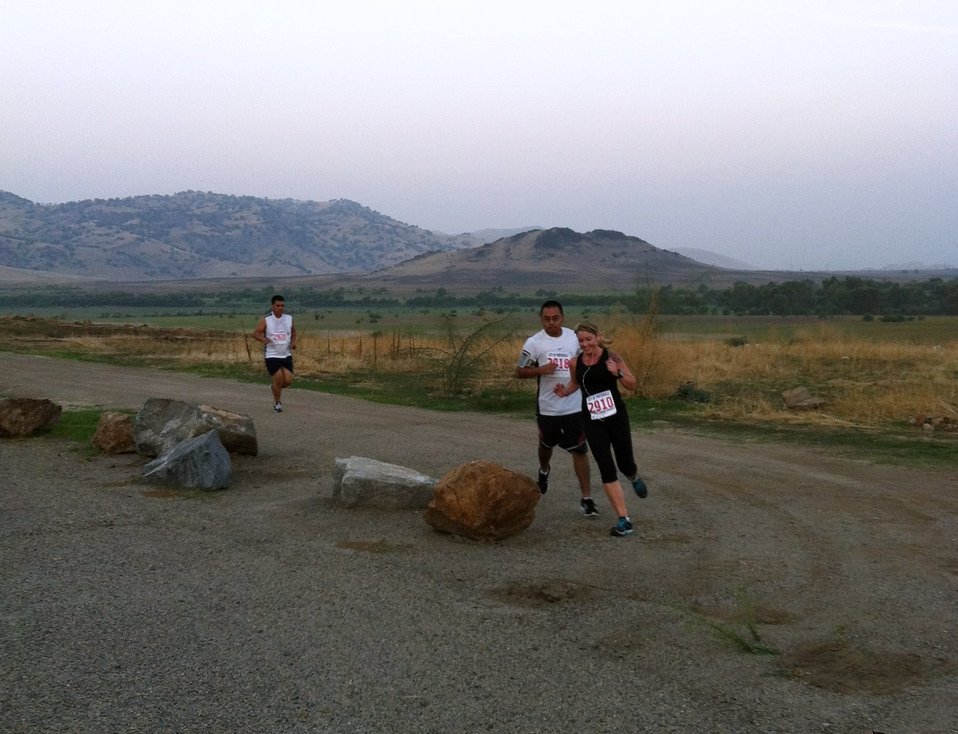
First-ever Fall Fitness Day held at Success Lake

Fall Fitness Day participants compete in a 5-kilometer run at Success Lake in Porterville, Calif., Oct. 22, 2011. The first-ever event, hosted by the City of Porterville Parks and Leisure Department and the U.S. Army Corps of Engineers Sacramento District, supports President Barack Obama’s America’s Great Outdoors initiative to re-connect Americans with the outdoors.